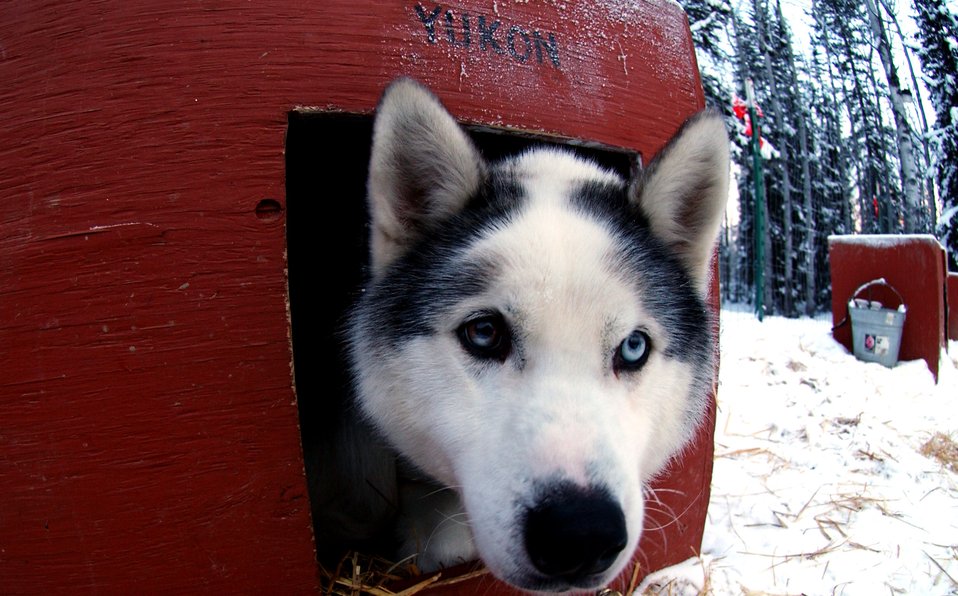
Pilot mushes dogs for noble cause

Yukon, a Siberian husky that is a member of a 27-dog sledding racing team stares curiously into the lens of a camera while keeping himself warm before he is called upon for practice Jan. 10 in Alaska. Yukon and his team race to raise awareness and funds for disabled children. Maj. Blake Matray, a 168th Air Refueling Wing KC-135 Stratotanker pilot at Eielson Air Force Base, Alaska, operates the Sled Dog Fund, Inc., which is a non-profit organization that support disabled children and their families and finance clinical research on developmental disabilities, hospital programs, and educational programs.